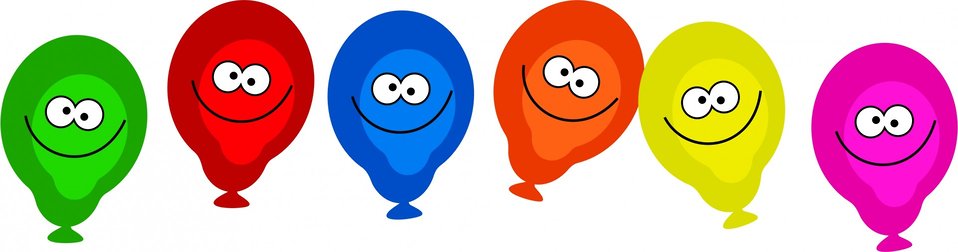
Happy smiling balloons

Illustration of a row of colourful birthday party balloons with happy smiling faces..